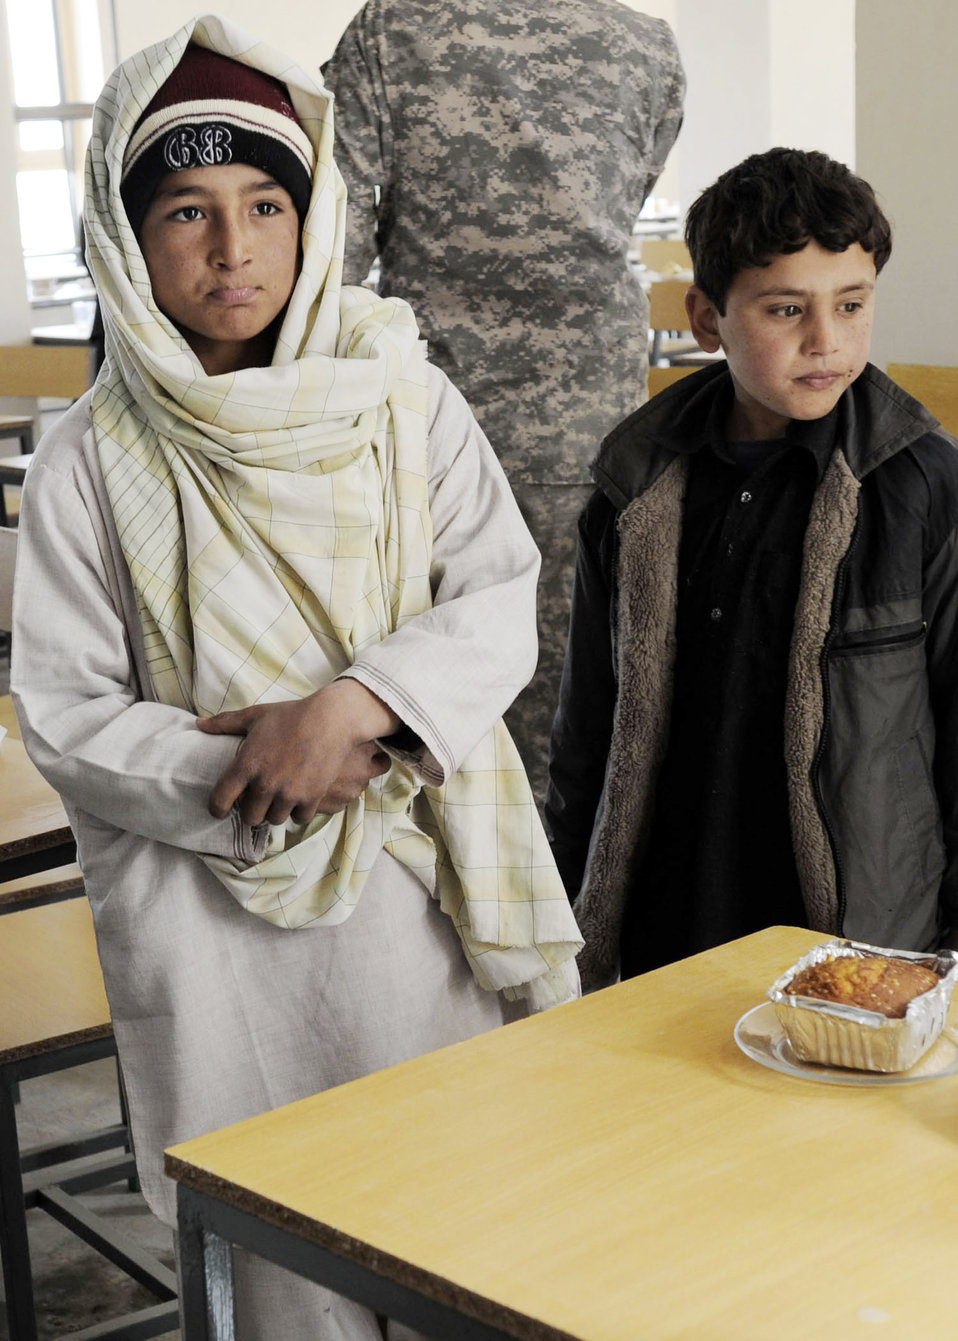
American servicemembers help bring education to Afghan community

Afghan children attend the opening ceremony of the Sheik Mati Boy's High School Feb. 25, 2010 in Qalat City of the Zabul Province in Afghanistan